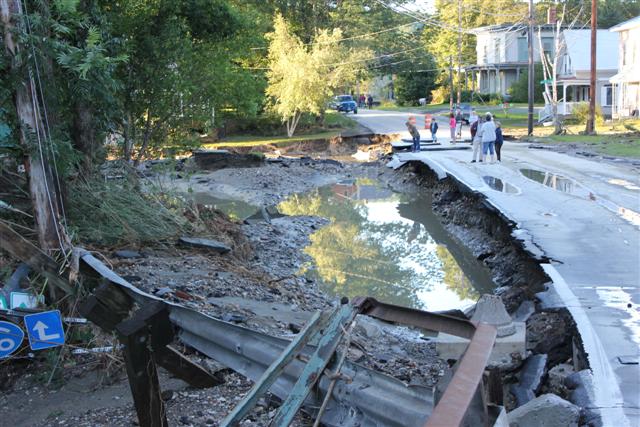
Damage after Irene

Bethel, VT. suffered from severe damage after Hurricane Irene on August 28, 2011.